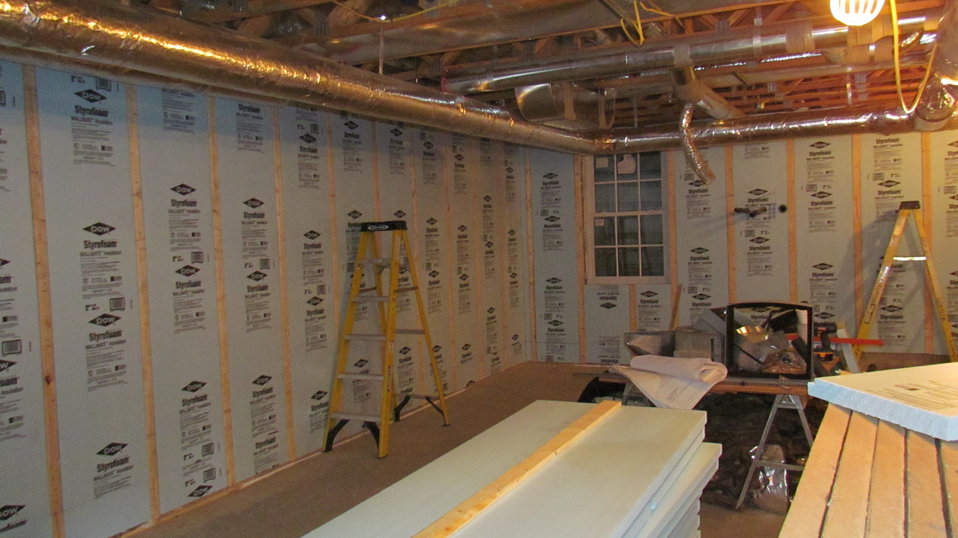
Net-Zero Energy Residential Test Facility – Image showing installation of interior insulation on basement walls. Picture is northwest corner of basement.